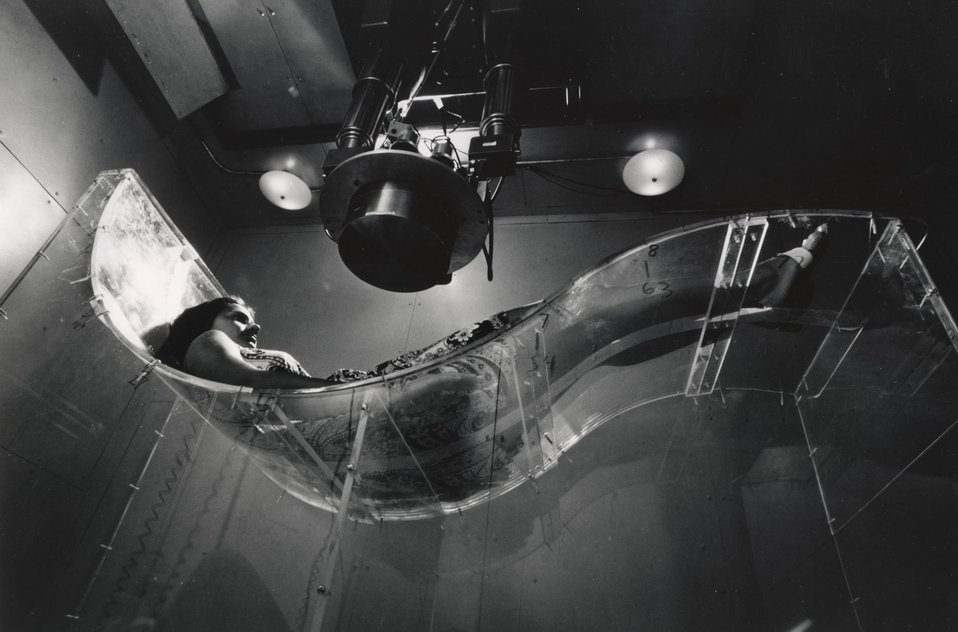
Although most of the sources of man-made radiation provide some benefit to man, we must continually evaluate the risks versus benefits of any radiation we add to the environment. Circa 1972.